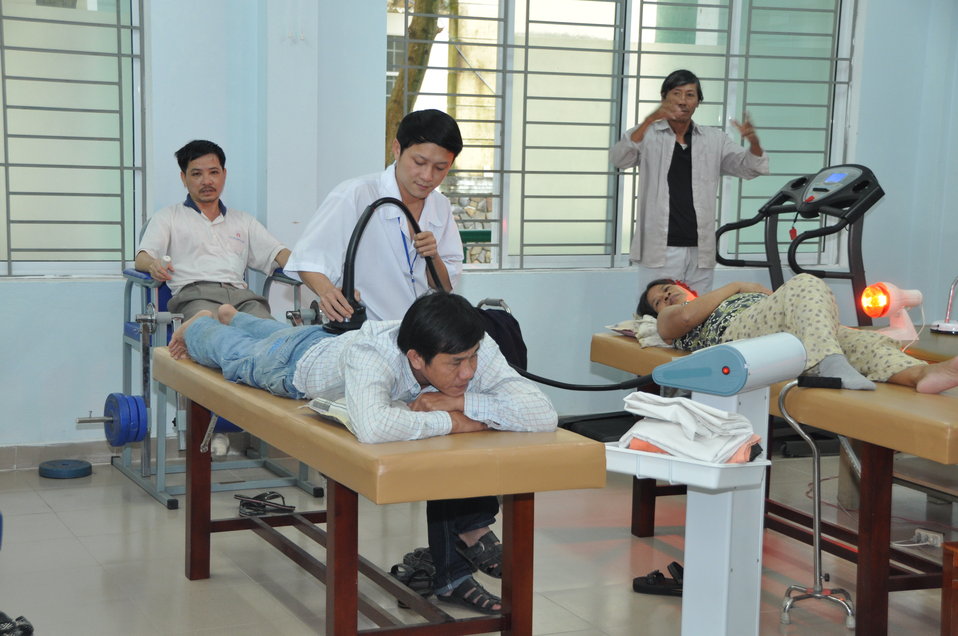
USAID support to Thanh Khe District Hospital

USAID-supported equipment and training help the staff at Thanh Khe District Hospital to meet the physical therapy needs of the disabled population of Danang.